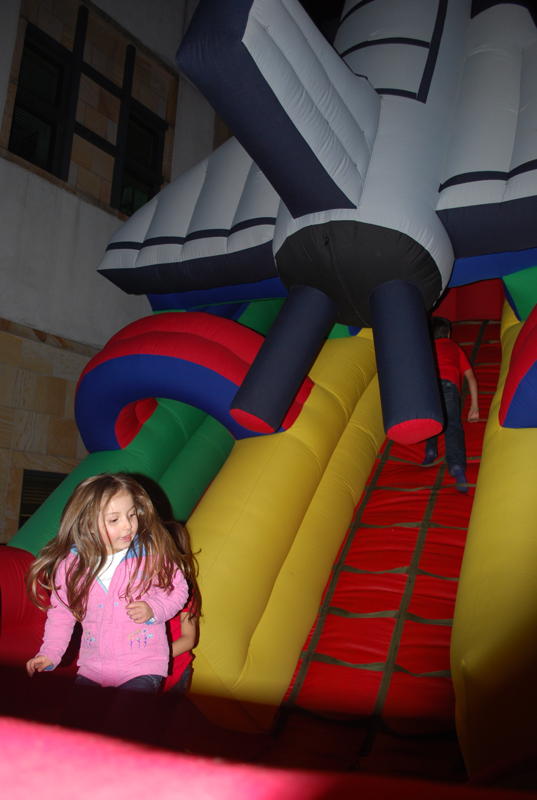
A Young Girl Celebrates the Fourth of July By Jumping a Space Shuttle Jumping Castle

A young girl celebrates the Fourth of July by jumping in a space shuttle jumping Castle during the U.S. Independence Day “State Fair” Community Event at the U.S. Embassy Bogotá in Colombia, on July 2, 2010.